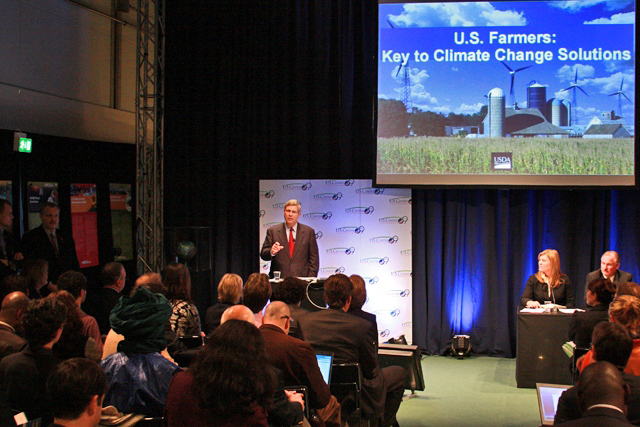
U.S. Secretary of Agriculture Speaks at COP-15

U.S. Secretary of Agriculture Tom Vilsack participates in keynote event at the U.S. Center during COP15 (Conference of the Parties to the UN Framework Convention on Climate Change) in Copenhagen, Denmark December 15, 2009.